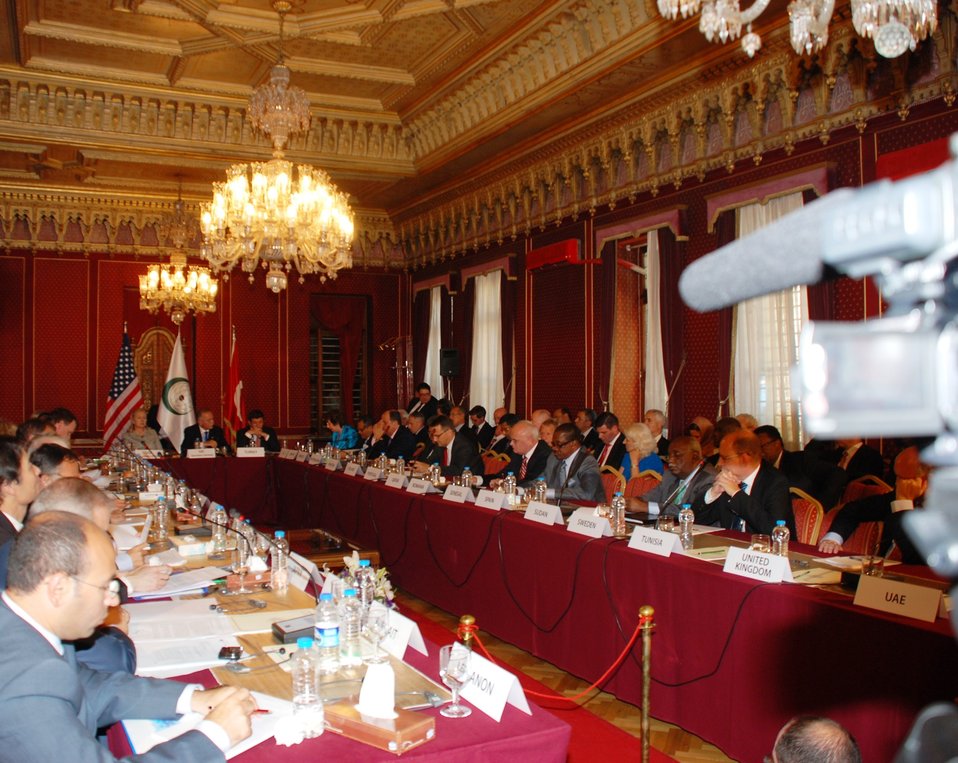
Secretary Clinton Participates in the Organization of Islamic Cooperation (OIC) Conference

U.S. Secretary of State Hillary Rodham Clinton participates in the Organization of Islamic Cooperation (OIC) Conference on “Building on the Consensus” at the Research Center for Islamic History, Art and Culture (IRCICA) in Istanbul, Turkey, on July 15, 2011.